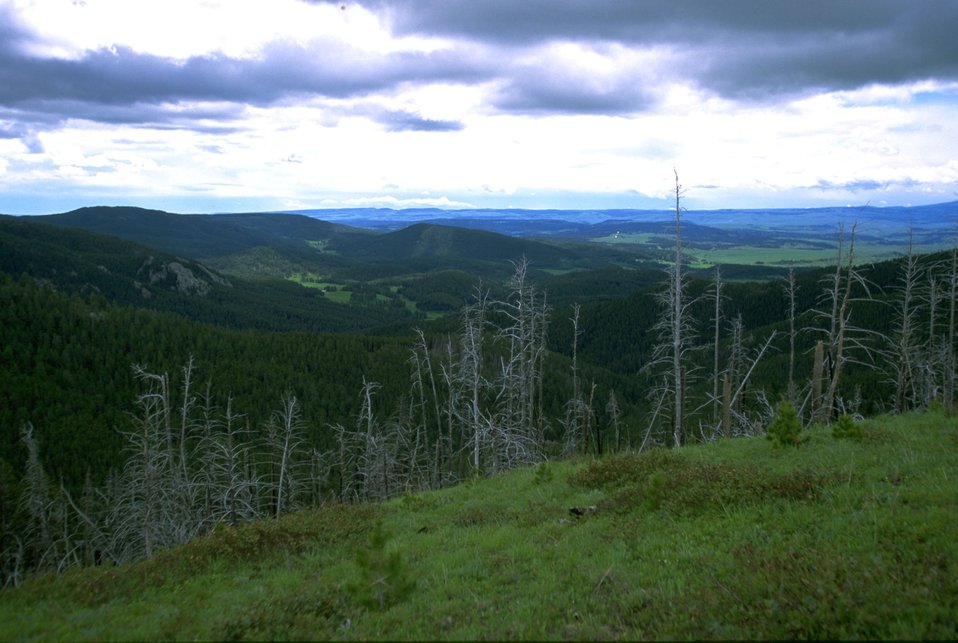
IN the Judith Mountains